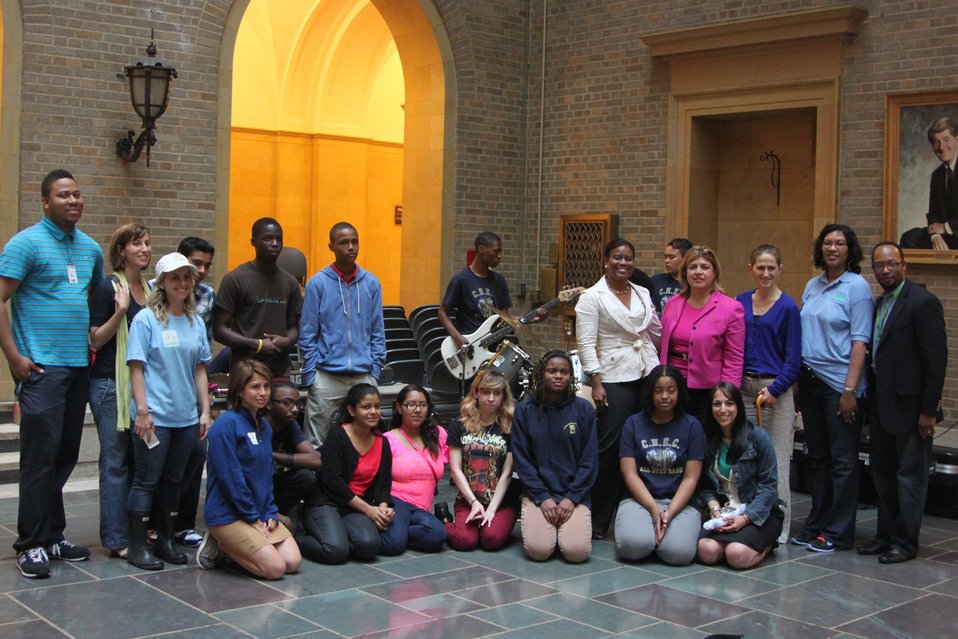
Columbia Heights Educational Campus Band and USDA

The Columbia Heights Educational Campus Band helped kick off the seasonal opening of the U.S. Department of Agriculture (USDA)Farmers Market on Friday, Jun. 7, 2013. USDA's Agricultural Marketing Service (AMS) manages the market.